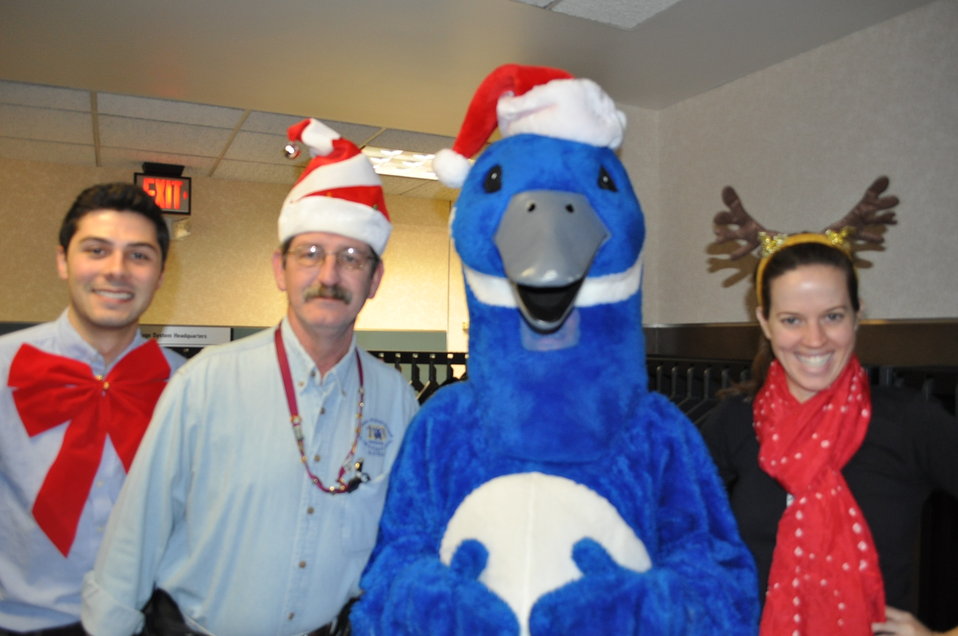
Puddles and breakfast planners

Note that Puddles is now channeling his inner Santa Claus.